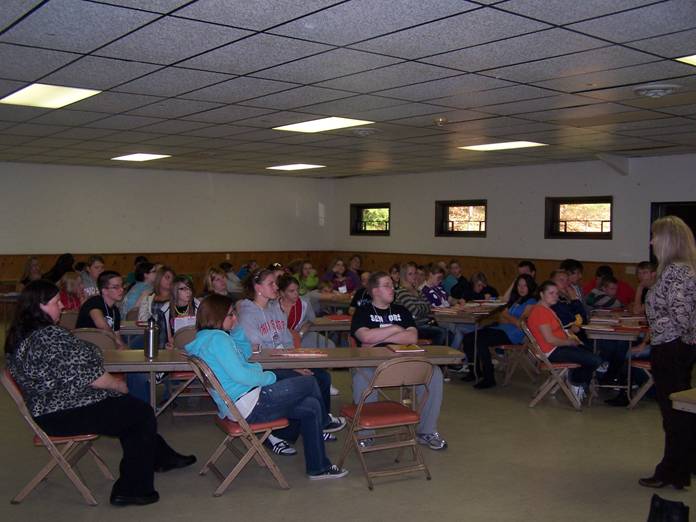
LAUNCH inc. Event in Jackson, OH

Dr. Natasha Slesnick, NIDA Grantee during NDFW and the event hosted by LAUNCH inc. in Jackson, OH